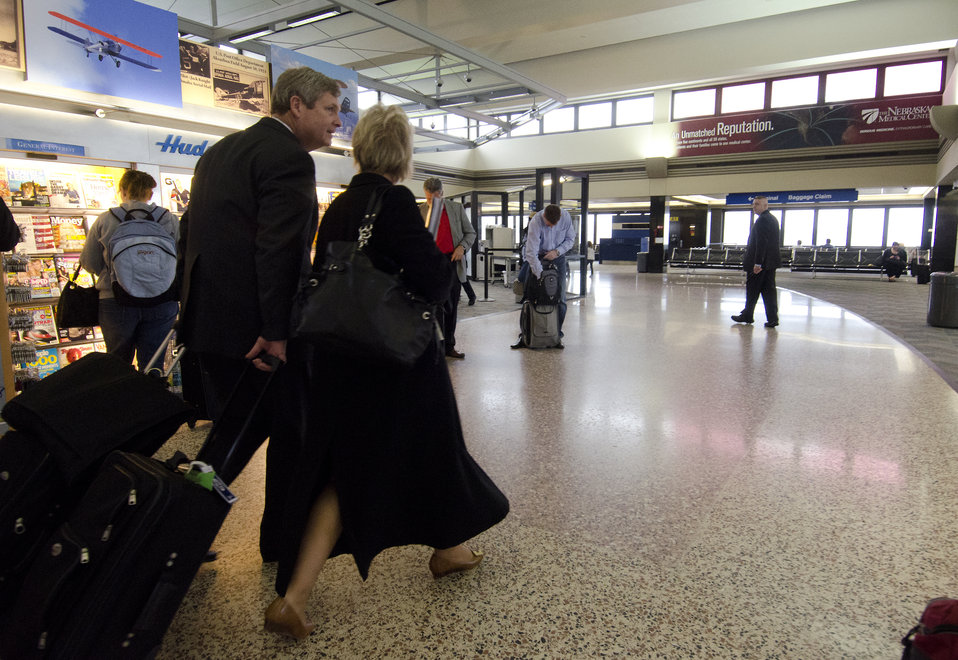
U.S. Department of Agriculture (USDA) Secretary Tom Vilsack toured BioProcess Algae facility at Green Plains Renewable Energy (GPRE), Inc. and unveiled the Phase II key component - commercial scale photo bioreactors/harvesters; after which he talked with company leadership, biologists, and engineers; guests and news media during the grand opening ceremony on April 15, 2011 in Shenandoah, IA. The operation is co-located within an GPRE’s ethanol factory and where BioProcess Algae technology is used to waste products; carbon dioxide, recycled heat and water to mass-produce algae. Algae from this facility are used for animal feeds; pharmaceutical and beauty products.